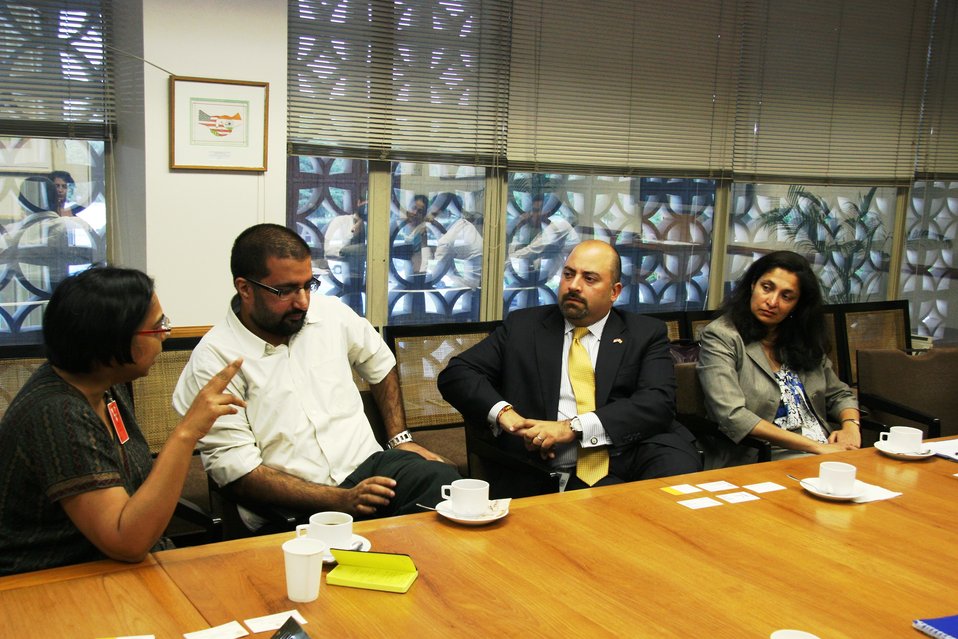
ADAS Keshap Participates in a Roundtable

U.S. Acting Deputy Assistant Secretary of State for South and Central Asian Affairs participates in a roundtable with civil society leaders who combat trafficking in persons (TIP) across India at the U.S. Embassy New Delhi in India on July 21, 2010.